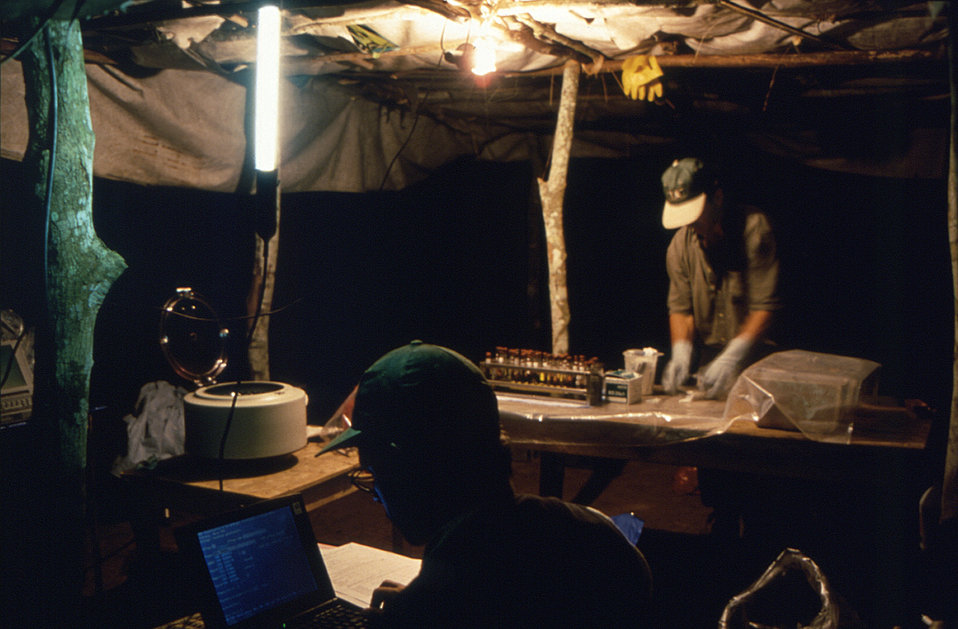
This image was created during an investigation into an outbreak of monkeypox, which took place in the Democratic Republic of the Congo (DRC), 1996 to 1997, formerly Zaire. Pictured here were CDC E.I.S. Officer, Yvan Hutin, M.D., and R. Joel Williams, D.V.M., as they were working in the on-site field laboratory at night, using a borrowed U.S. Embassy generator to power the lights, computer, satellite phones, and centrifuges.